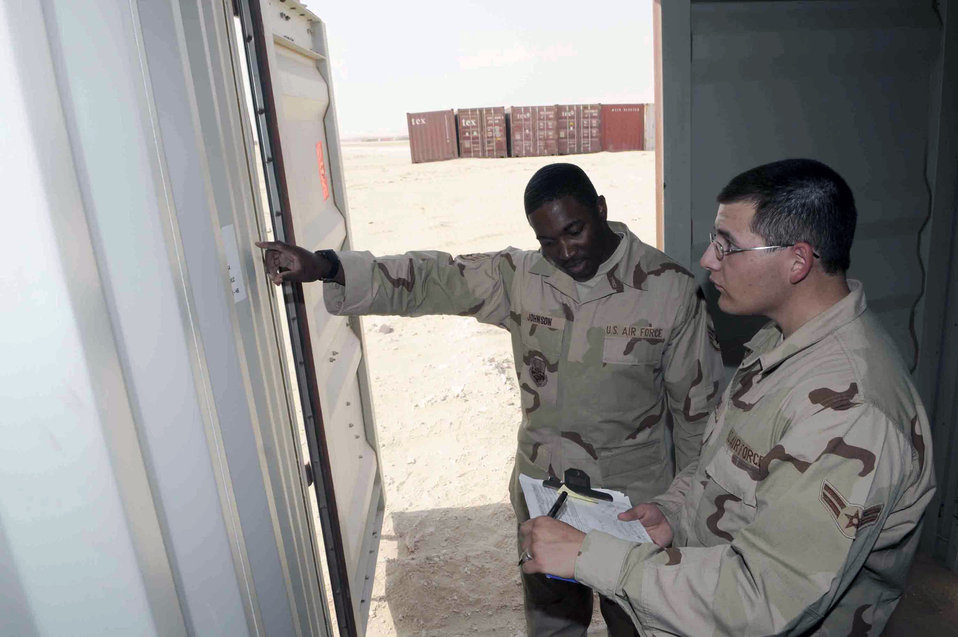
Logistics Readiness Squadron

Airman 1st Class Joseph Trevino and Staff Sgt. Maurice Johnson match container numbers to paperwork to ensure the correct container is shipped. Airman Trevino and Sergeant Johnson are assigned to the 379th ELRS.